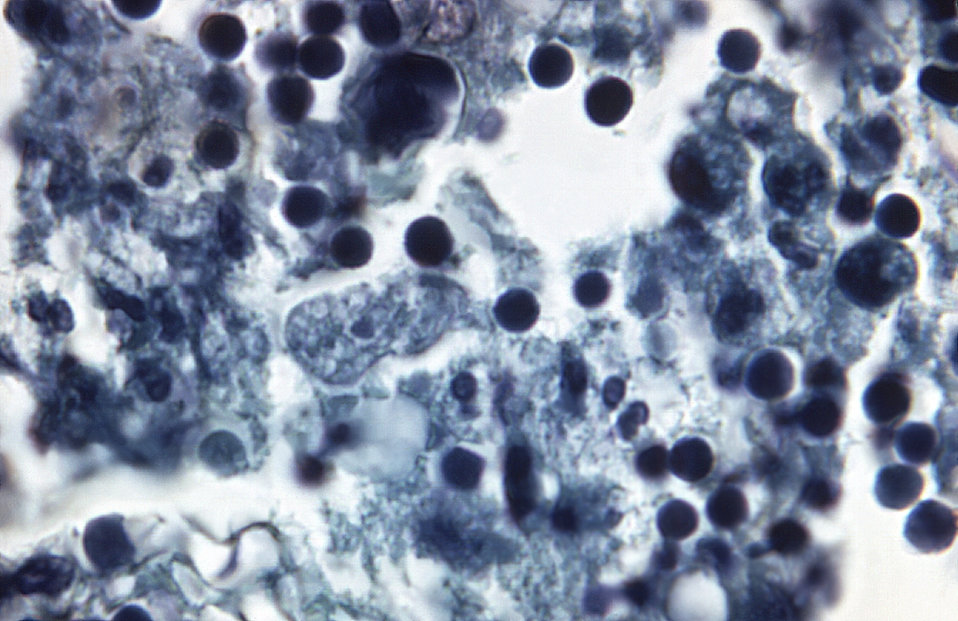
Magnified 1180X, this 1973 H&E-stained photomicrograph revealed the presence of Naegleria gruberi, free-living amoebae in a human brain tissue specimen, in a case of primary amoebic meningoencephalitis (PAM). Free-living amoebae belonging to the genera Acanthamoeba, Balamuthia, and Naegleria, are important causes of disease in humans and animals.What is Naegleria?